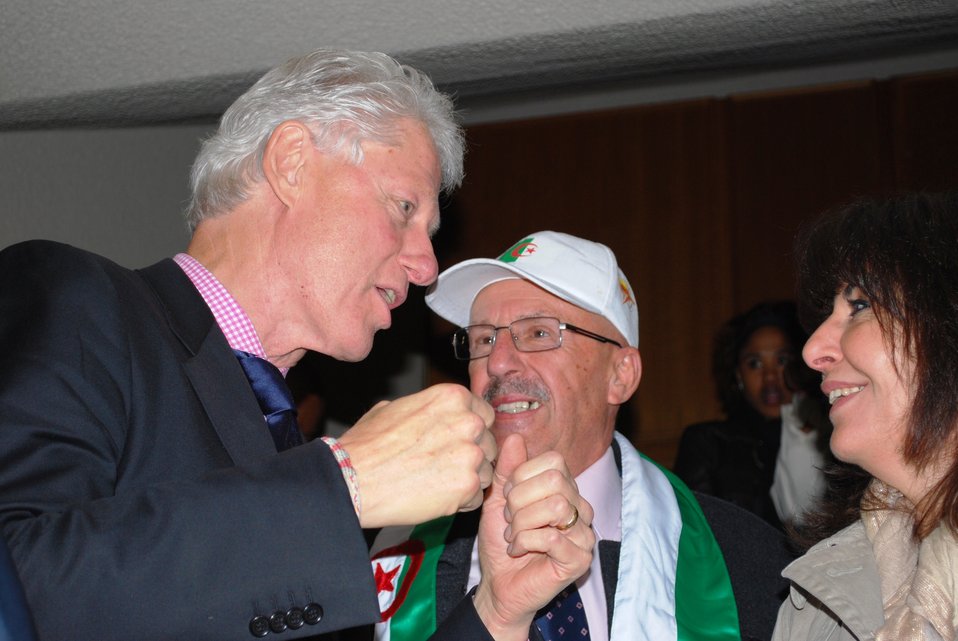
Former Pres. Clinton Speaks With Algerian Ambassador to South Africa Bencheikh

Former President Bill Clinton speaks with Algerian Ambassador to South Africa Mourad Bencheikh at the U.S. vs. Algeria World Cup soccer match at Loftus Versfeld Stadium in Pretoria, South Africa, on June 23, 2010.